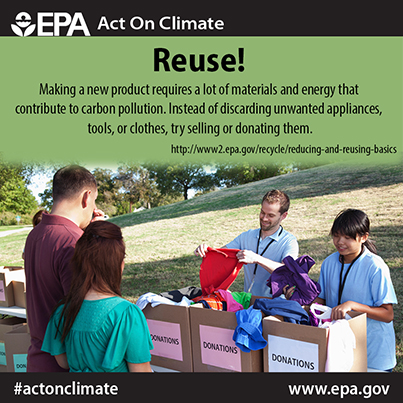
Reuse!

Reduce, Reuse, Recycle. We know you’ve heard it before – but did you know it’s a way to #ActOnClimate?